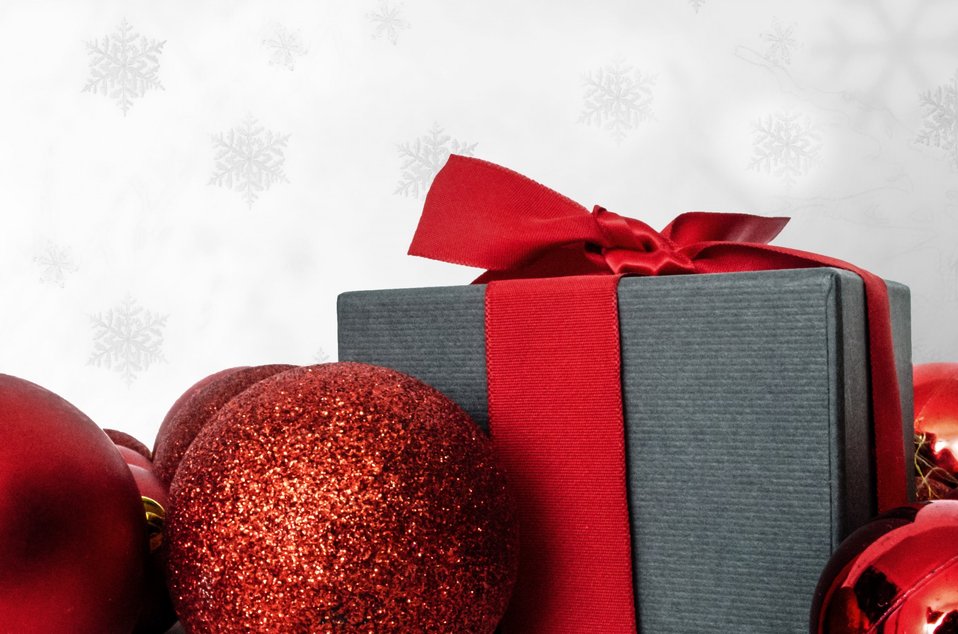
Christmas background.